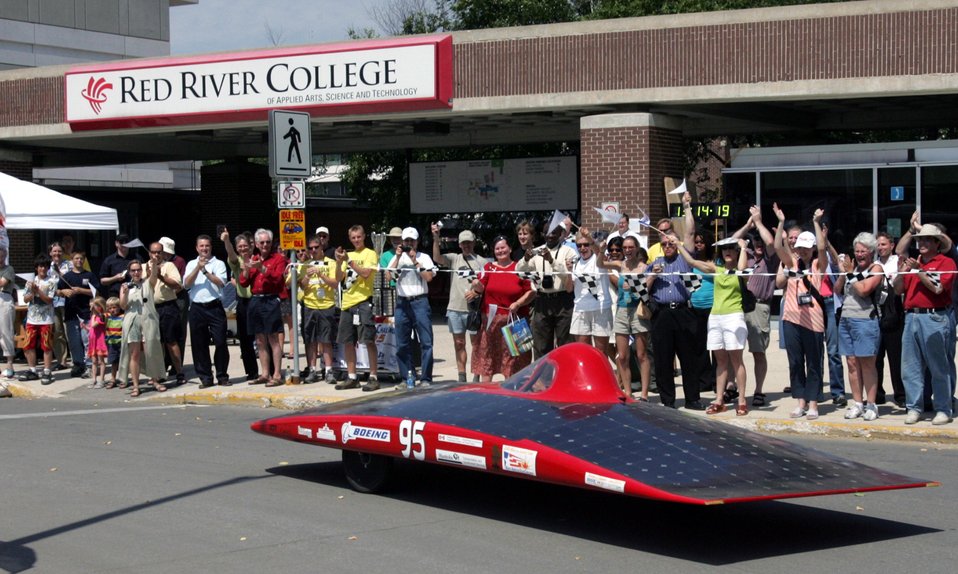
SPECTATORS WELCOME HOME THE RED RIVER RAYCER IN WINNIPEG, MANITOBA, CANADA, DURING THE 2,500 MILE NORTH AMERICAN SOLAR CHALLENGE ON JULY 23, 2005.

THE 2005 NORTH AMERICAN SOLAR CHALLENGE (ASC) WAS A CROSS COUNTRY SOLAR RACE THAT WAS HELD JULY 17 TO 27, 2005. THE RACE STARTED IN AUSTIN, TEXAS AND FOLLOWED U.S. ROUTE 75 AND THE TRANS-CANADA HIGHWAY (HWY 1) TO CALGARY, ALBERTA, CANADA. TEAMS FACED VARIED CLIMATES, TOPOGRAPY AND ROAD CONDITIONS. THE FIRST TIME THE WORLD'S LONGES SOLAR CAR RACE WENT THROUGH THE U.S. AND CANADA